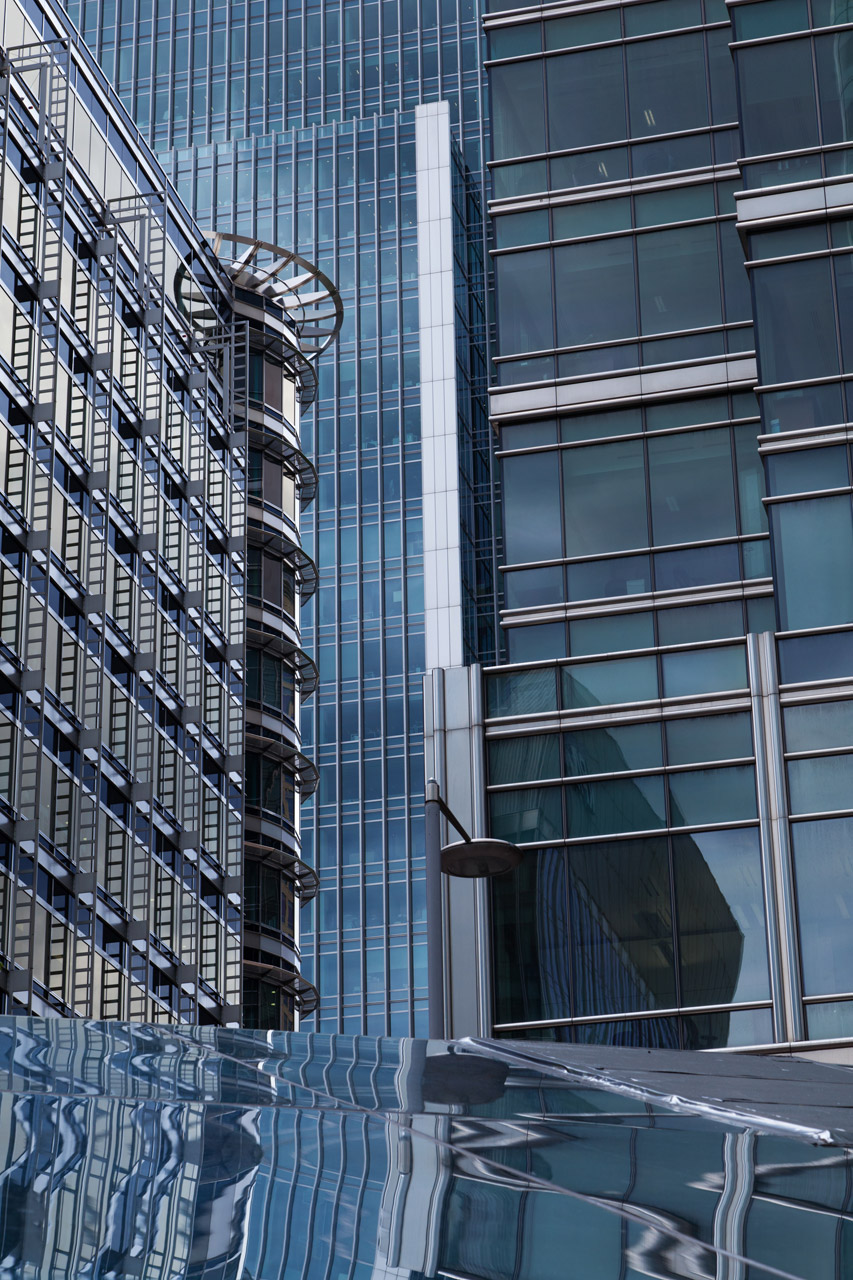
Modern architectural pattern

Modern architectural background photo.